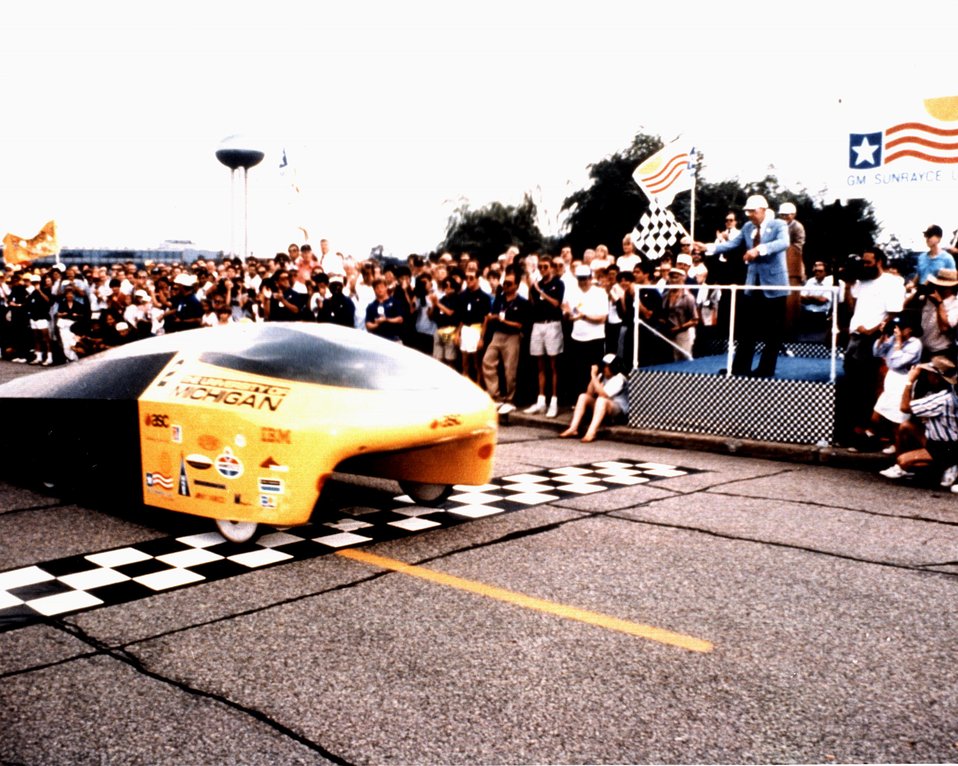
MICHIGAN'S SUNRUNNER TAKING THE CHECKERED FLAG TO WIN GM SUNRAYCE USA.